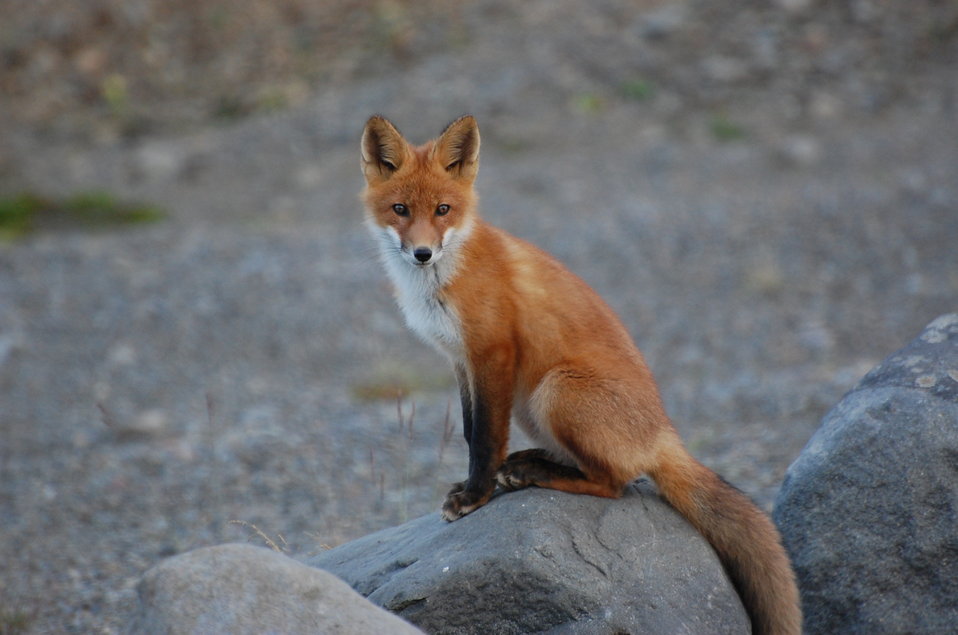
Red Fox kit

near Outer Marker, Izembek National Wildlife Refuge